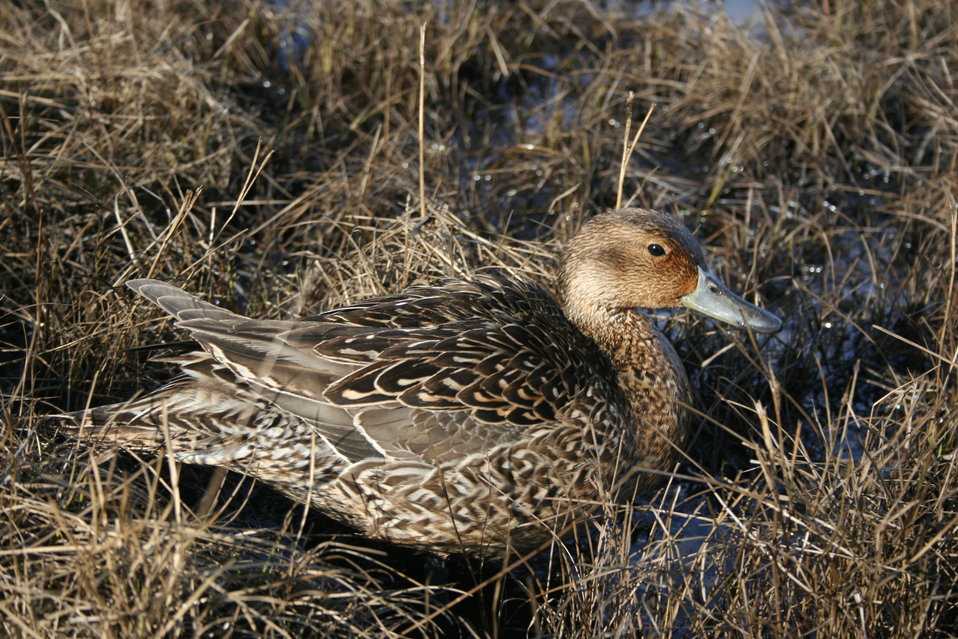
Female pintail strutting her stuff

USFWS Yukon Delta NWR
This female pintail was hanging out near one of the refuge field camps. She was very friendly and had no problems posing for the camera.